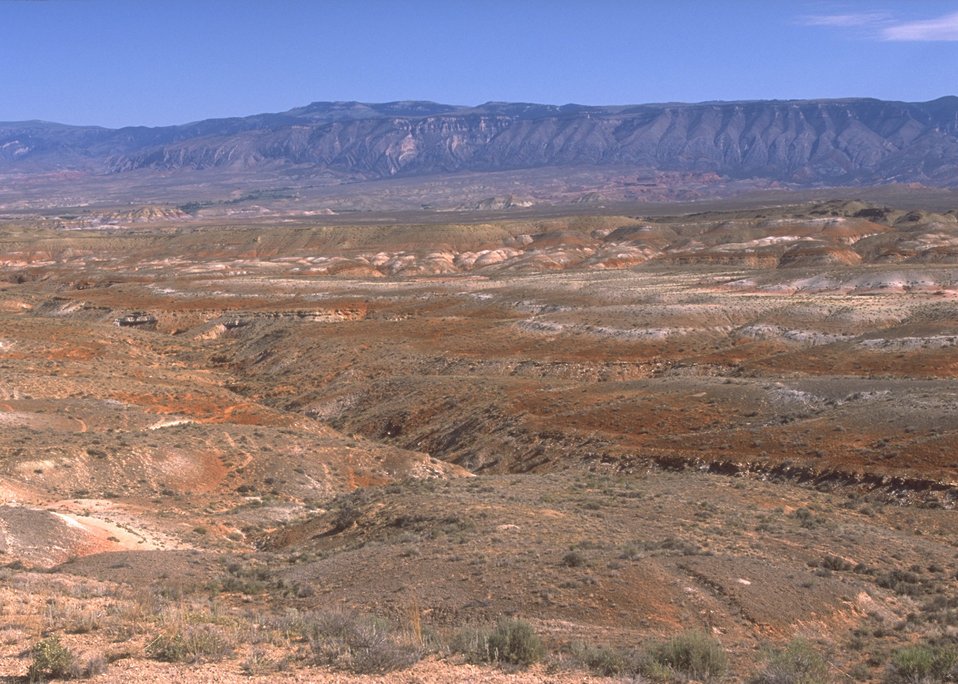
View along the Red Gulch/Alkali Back Country Byway, Worland Field Office.